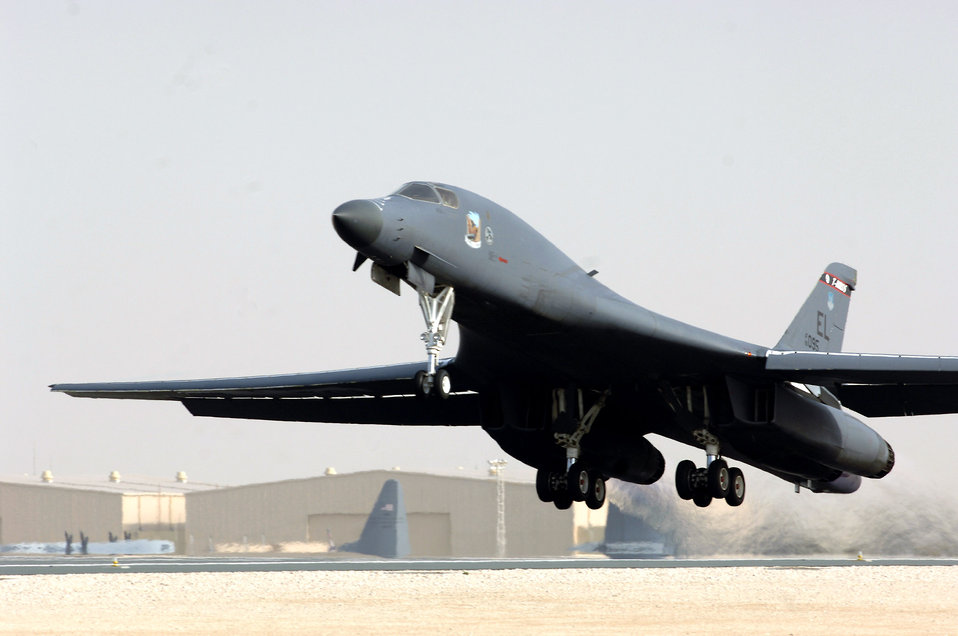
Sept. 24 airpower summary: B-1Bs bomb enemy targets

A B-1B Lancer takes off from a base in Southwest Asia to support Operations Enduring and Iraqi Freedom. The B-1B has the capability to carry guided and unguided weapons and deliver massive quantities of precision and non-precision weapons against specific targets.